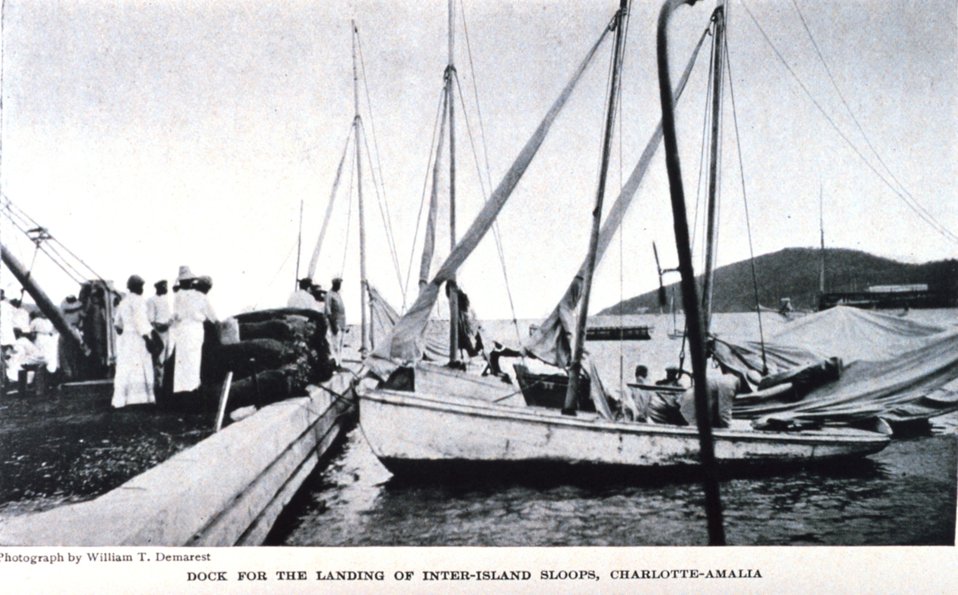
'Dock for the Landing of Inter-Island Sloops Charlotte-Amalia'. In: 'The Virgin Islands Our New Possessions and the British Islands', by Theodoor De Booy and John T. Faris, 1918. J. B. Lippincott and Company, Philadelphia. P. 25. Library Call Number C/hc100 V81 B.